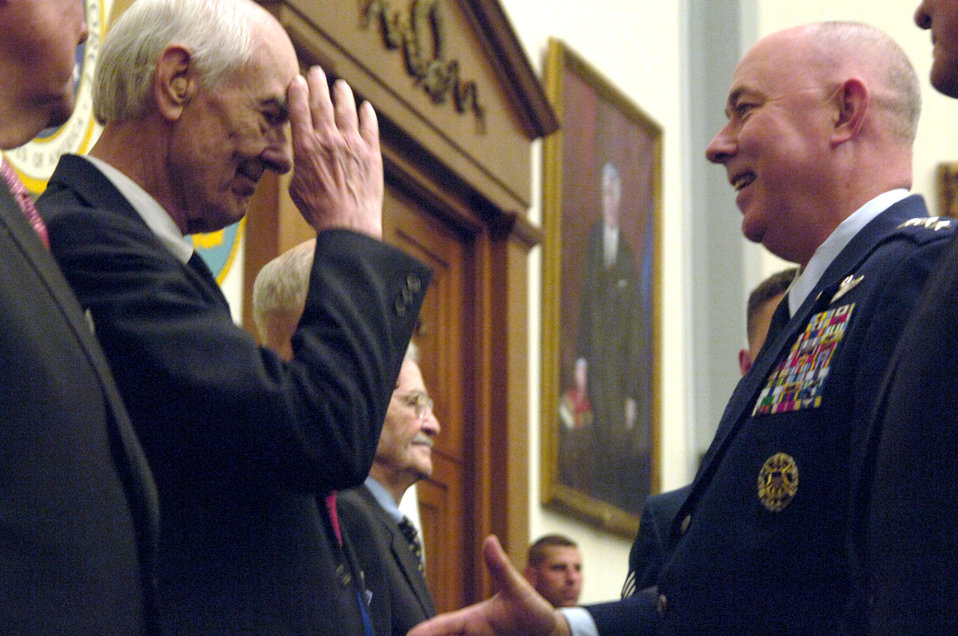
WWII bomber crew awarded Distinguished Flying Cross

Former Staff Sgt. Robert D. Speed salutes Air Force Chief of Staff Gen. T. Michael Moseley after receiving the Distinguished Flying Cross for his role in the Ploesti, Italy, mission 63 years ago. Mr. Speed was a member of a B-24 Liberator Bomber crew who encountered heavy anti-aircraft fire July 15, 1944, and as a result lost one engine. The crew still managed to complete their mission of bombing oil refineries in Romania, but was shot down the next day while participating in a raid over Austria; they were taken prisoner of war.